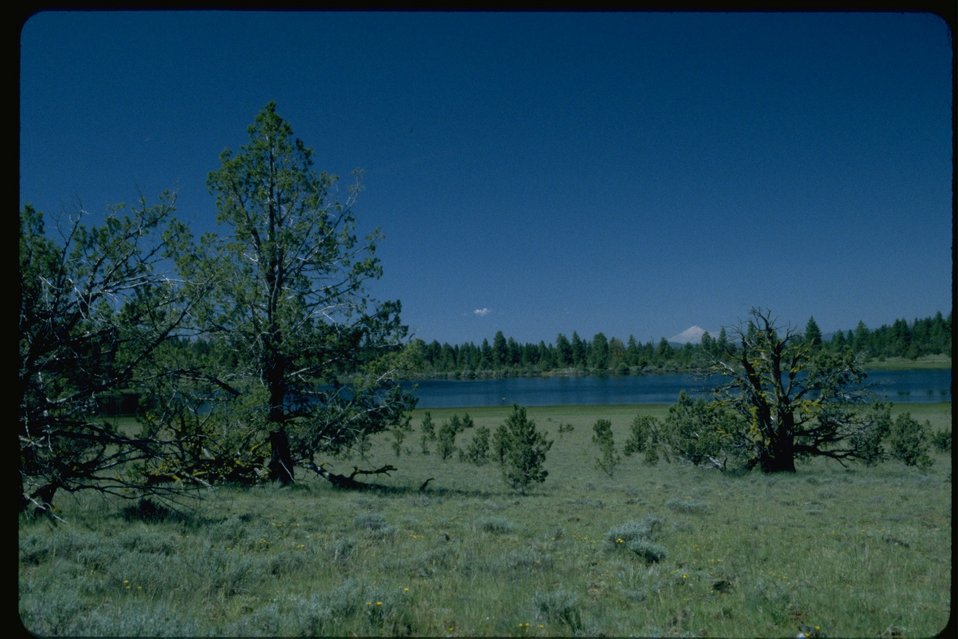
Upper Midway Reservoir with Mt. Shasta in distance.